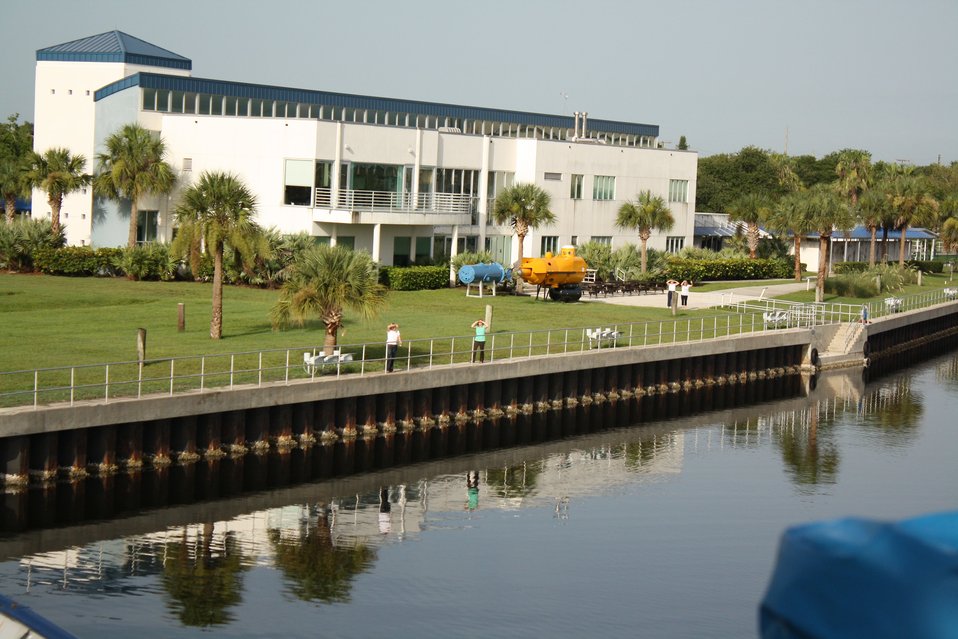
Harbor Branch ship base at Fort Pierce.